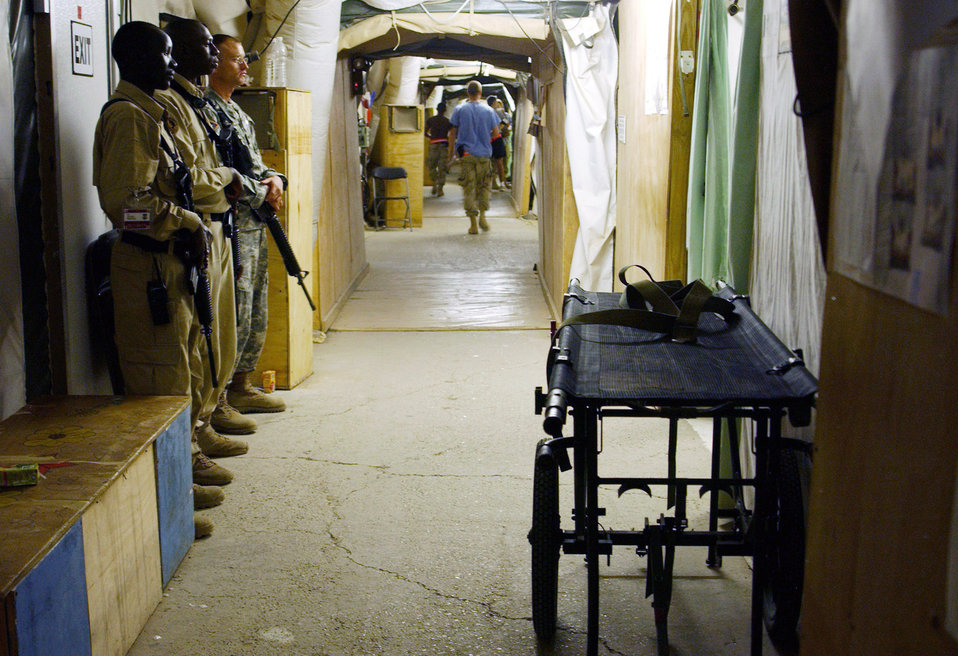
Balad's medics move into new facility

Ugandan and Army guards stand watch Aug. 3 as Airmen from the 332nd Expeditionary Medical Group and volunteers move patients and equipment from the Air Force Theater Hospital's tent facility to the newly upgraded, pre-engineered facility at Balad Air Base, Iraq. The upgraded former Iraqi Air Force Academy hospital is about 97,000 square feet. It has 20 intensive care units, 40 beds and up to eight operating tables.